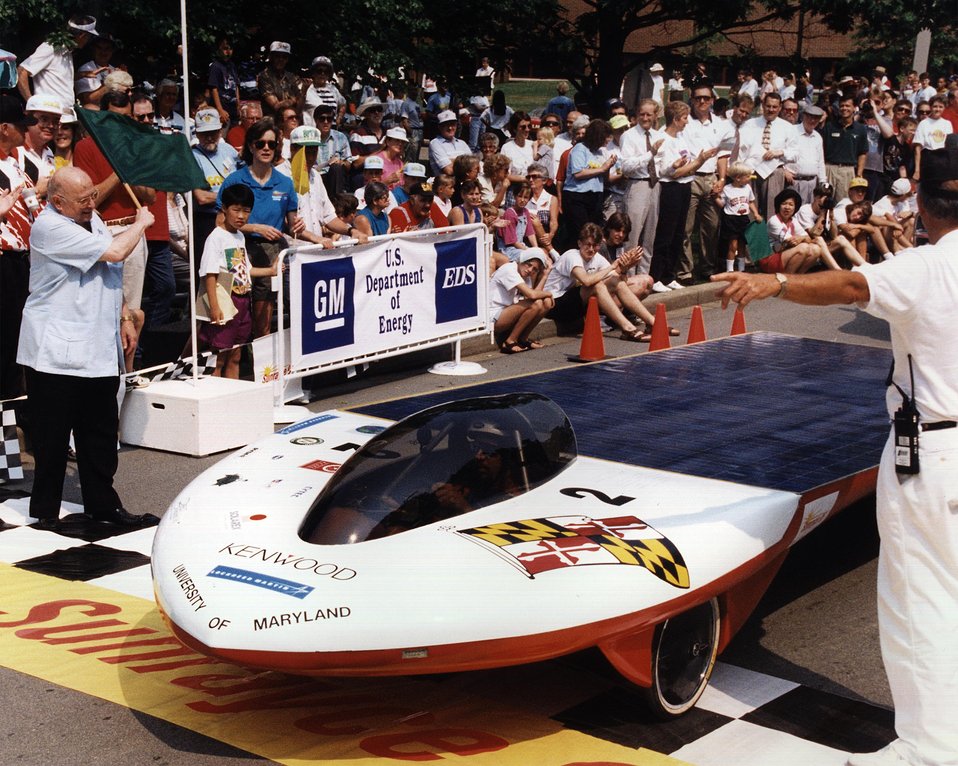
UNIVERSITY OF MARYLAND CAME IN TWELFTH WITH 'PRIDE OF MARYLAND II.I.'